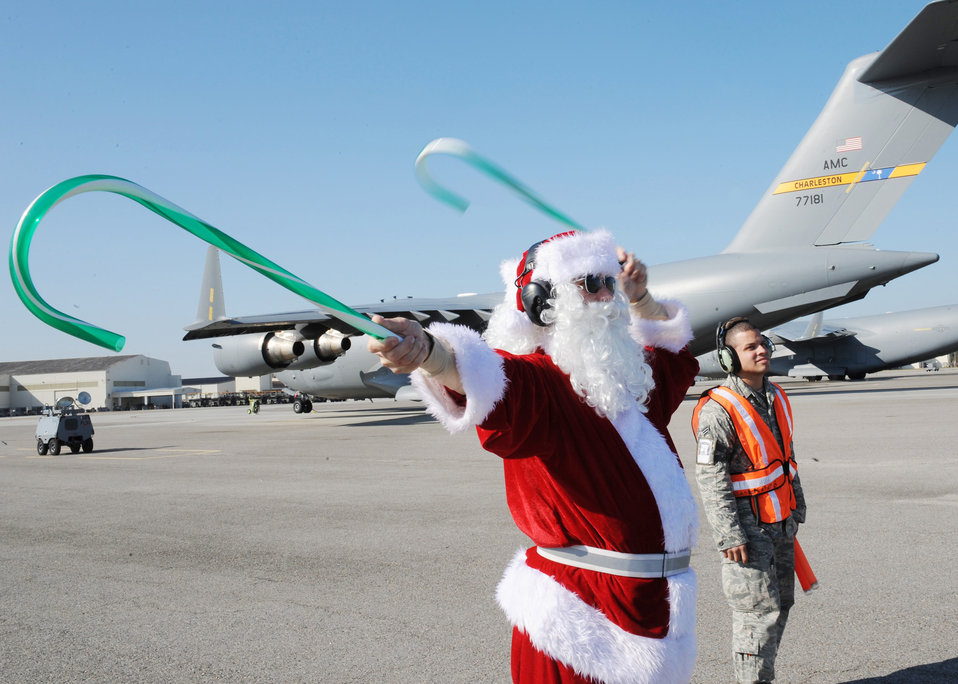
Santa Claus, friends welcome C-17

Using a pair of oversized candy canes, Maj. Aaron Sasson marshals in a C-17Globemaster III on the flightline at Charleston Air Force Base, S.C., Dec. 22, 2009. Major Sasson is the operations officer for the 4437th Aircraft Maintenance Squadron.